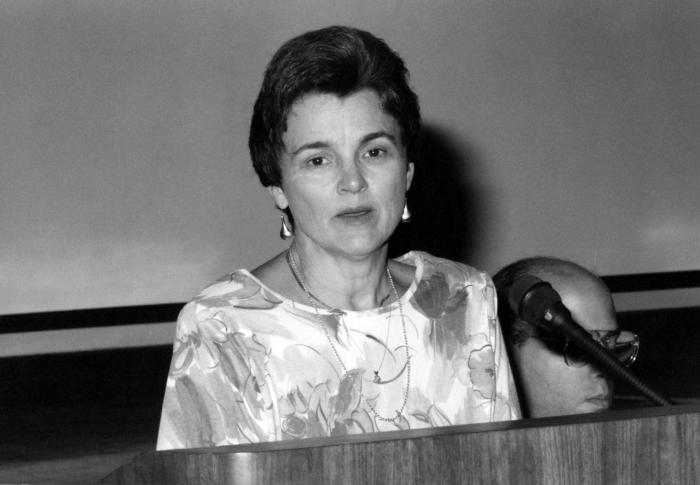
This photograph shows Centers for Disease Control's Dr. Linda Martin, a Research Microbiologist for the National Center for Infectious Diseases, during a 1993 presentation to her colleagues.